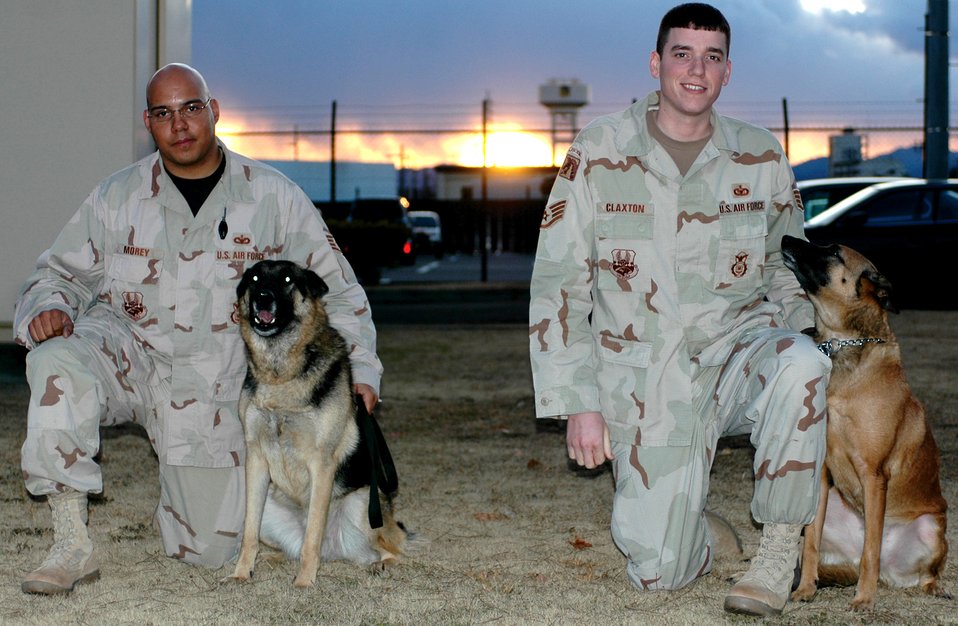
Security forces work side by side with Soldiers in Iraq

YOKOTA AIR BASE, Japan (AFPN) -- Staff Sgt. Gerald Morey kneels with Louis, his German shepherd, and Staff Sgt. Matthew Claxton poses with his Belgian Malinois, Elsa. The military working dog teams recently returned from a seven-month deployment to Tikrit, Iraq, attached to the 2nd Battalion, 7th Infantry Regiment, part of the 18th Airborne Corps.